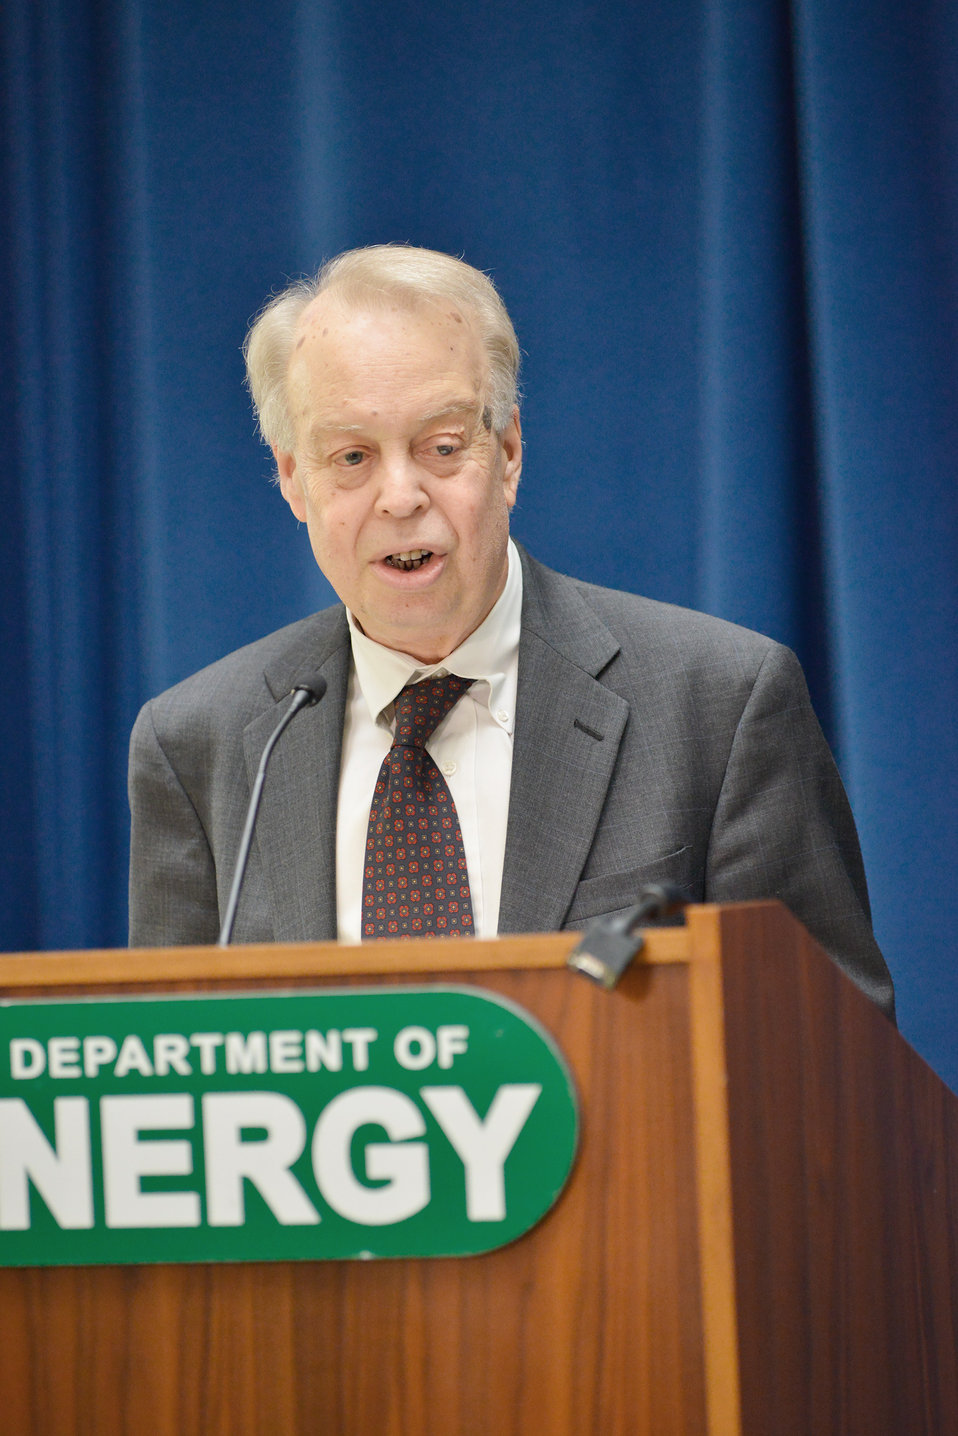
Eric J. Fygi

Mr. Fygi is this year’s recipient of the James Schlesinger Award. Mr. Fygi has served in the position of Deputy General Counsel, and periodically as the Acting General Counsel, since the Department’s founding in October 1977. Mr. Fygi is responsible to the Secretary of Energy for all of the Department’s legal affairs. He is a charter member of the career Senior Executive Service with over 45 years of service to our Nation. His recognitions include four Presidential Rank Awards, a 2012 Burton Award for Legal Achievement and two formal commendations for legislative accomplishments from President Gerald Ford.